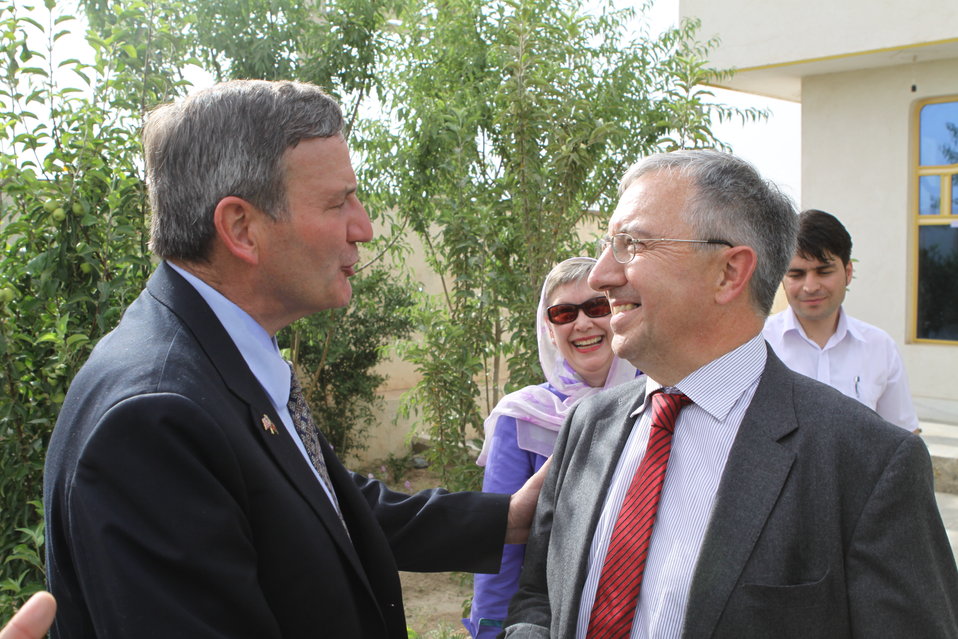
100525 Hirat Marble Conference 881